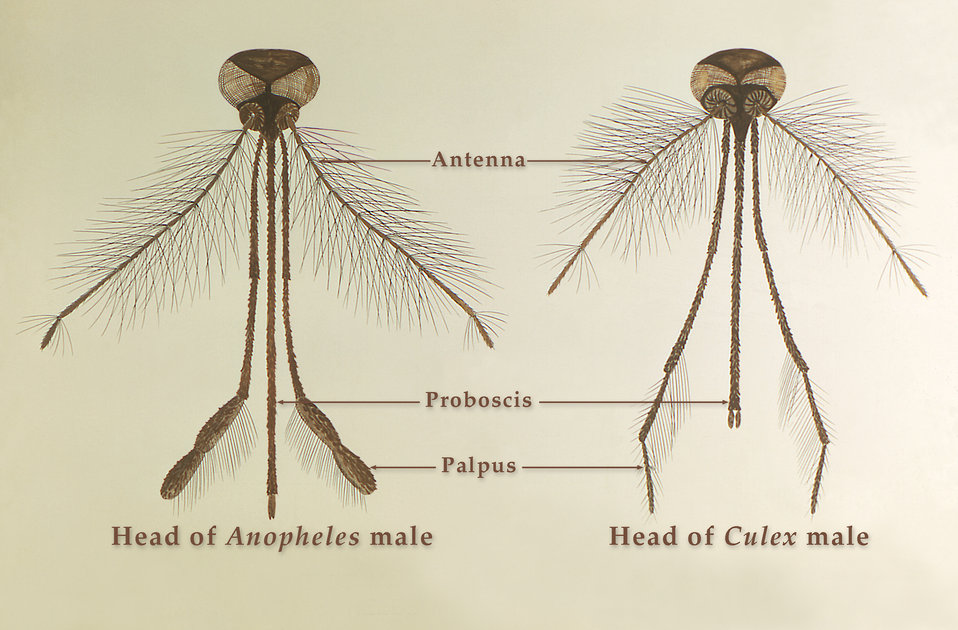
This illustration reveals the morphologic differences in the mouthparts and antennae between an Anopheles specie male mosquito and that of a male Culex specie. The Anopheles sp. male possesses more robust palpi, tipped with paddle-like ends, whereas, the palpi of the Culex sp. male are considerably slimmer. The Anopheles male's antennae are larger, sporting a greater amount of sensorial setae than its Culex counterpart, as well as a longer proboscis.